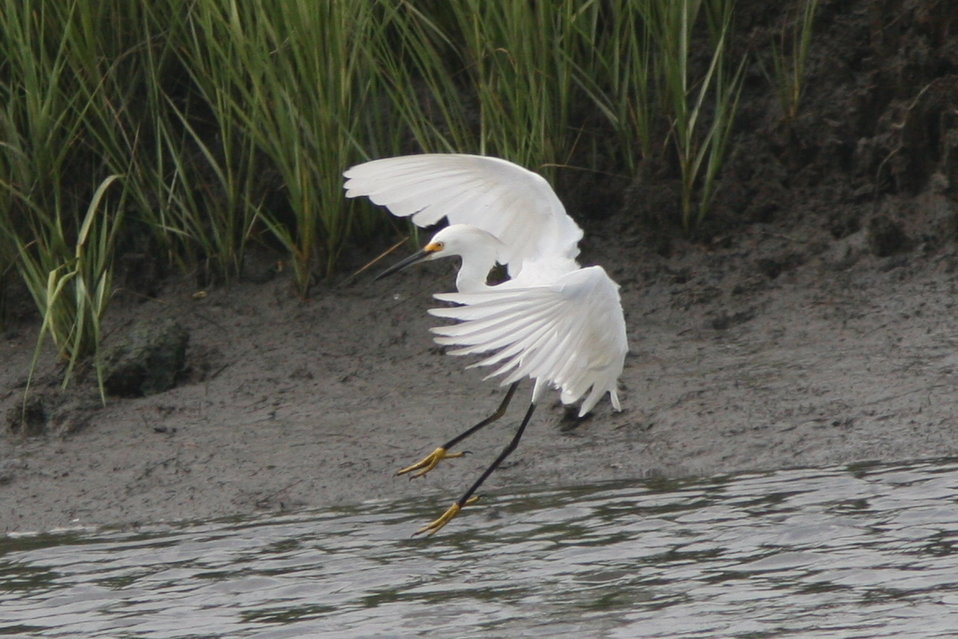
snowy egret

Brigantine National Wildlife Refuge, NJ